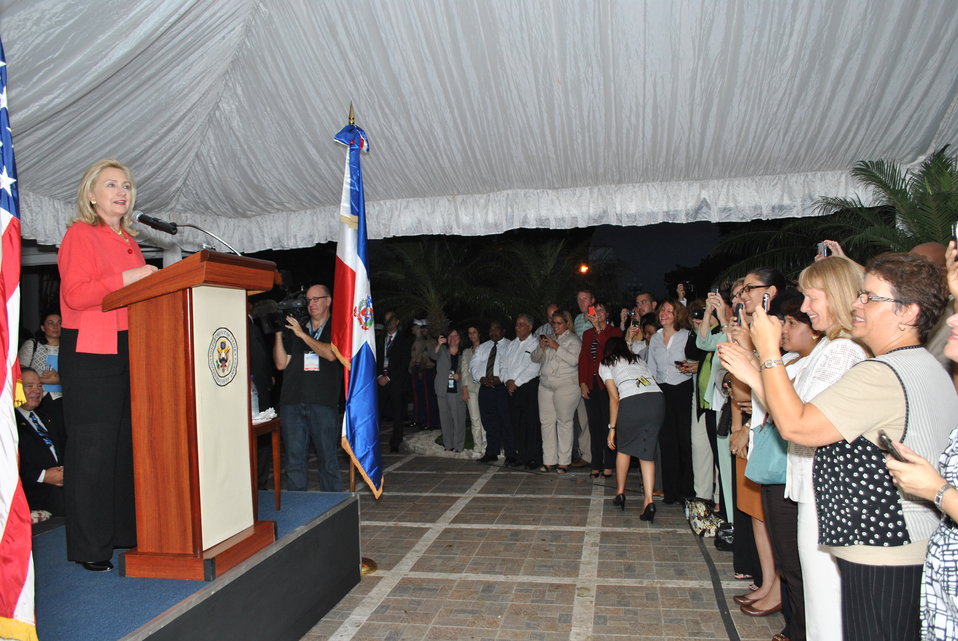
Secretary Clinton Addresses Embassy Staff

U.S. Secretary of State Hillary Rodham Clinton addresses U.S. Embassy employees in Santo Domingo, Dominican Republic, on October 5, 2011.